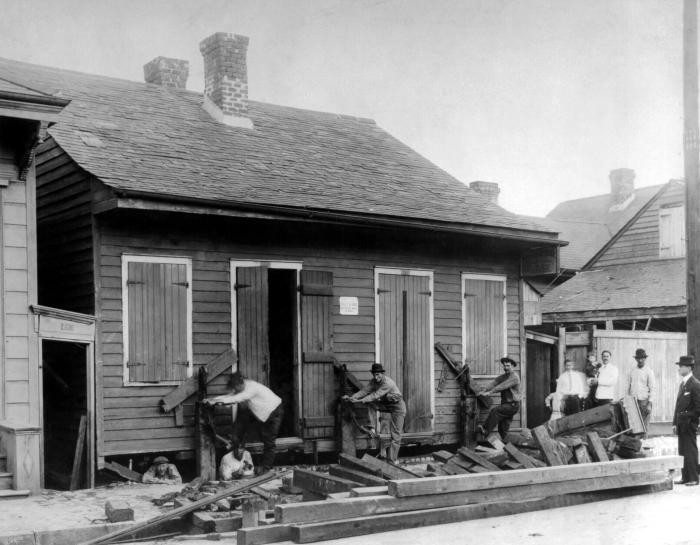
This 1914 photograph depicts the methods employed by laborers during the process of raising a house.